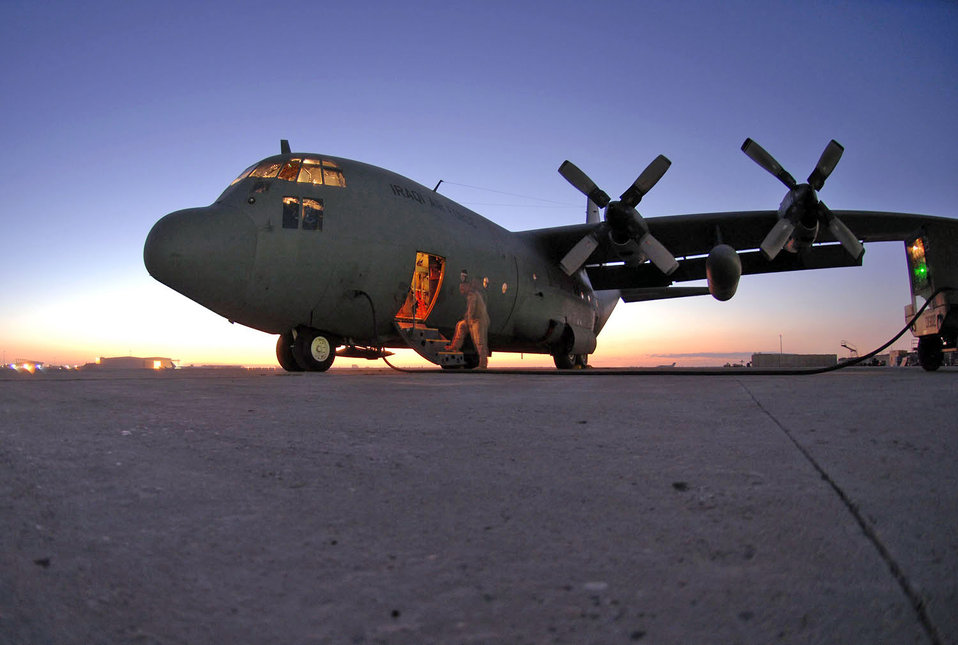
Airmen aid in Iraqi election ballot transport

Master Sgt. Louis Carter performs a preflight inspection on an Iraqi C-130E Feb. 2 at Sather Air Base, Iraq. The C-130 was one of two aircraft on its way to pick up Iraqi election ballot boxes. Sergeant Carter is a 321st Air Expeditionary Airlift Squadron combat aviation adviser deployed from the 550th Special Operations Squadron at Kirtland Air Force Base, N.M.